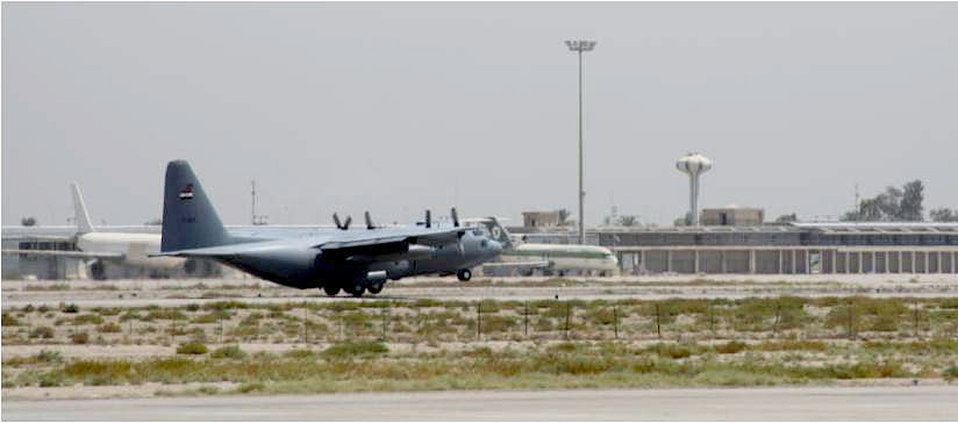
Iraqi Air Force Academy opens its doors

An Iraqi C-130 takes off from New Al Muthana Air Base, Baghdad, Sept. 1, 2010, with the inaugural class of cadets bound for the recently re-built Iraqi Air Force College in Tikrit.